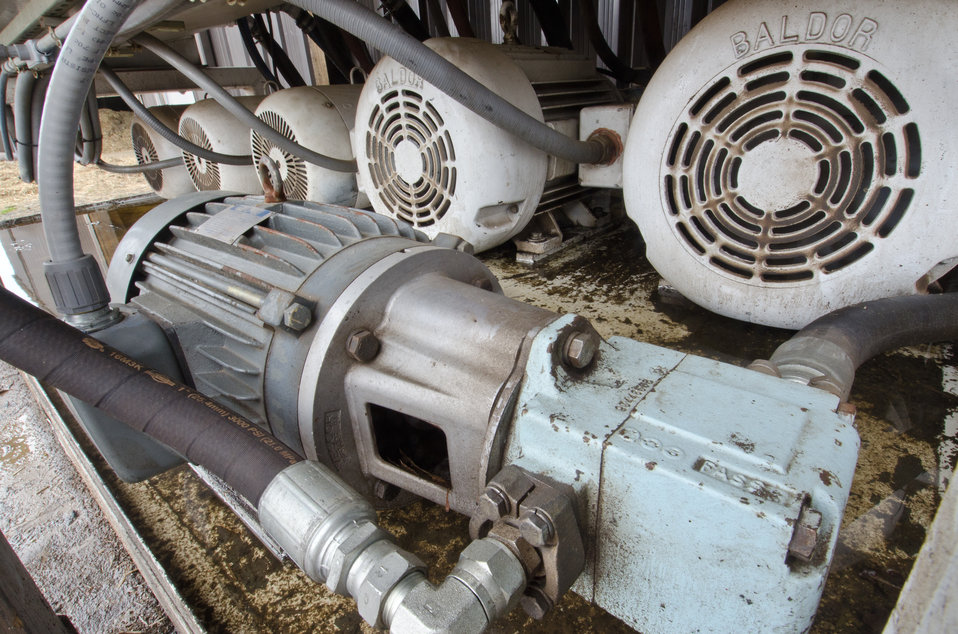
Electric motors replaced diesel engines at Heidel Hollow Farms, on Wednesday, April 20, 2011. A family owned farm since 1852 is a 1,800 acre operation in Germansville, PA. Led by David Fink, President of Heidel Hollow Farms, they mainly produce and compact hay for export and grow produce on 300 acres for local sale. With the financial help of the U.S. Department of Agriculture (USDA) an 896 panel solar array was recently installed on non farmable diversion ditches. Rated at 200 kilowatts, they project 240 megawatts of electricity to be produced each year, providing up to 70% of the farms electrical needs. Additionally, USDA financial assistance made it possible to replace the hay compactor’s diesel engines with clean low-maintenance, low operating cost electric motors to power the compactor's hydraulic system. The compactor increases the density of baled hay by two and half times for more efficient shipping to overseas customers.